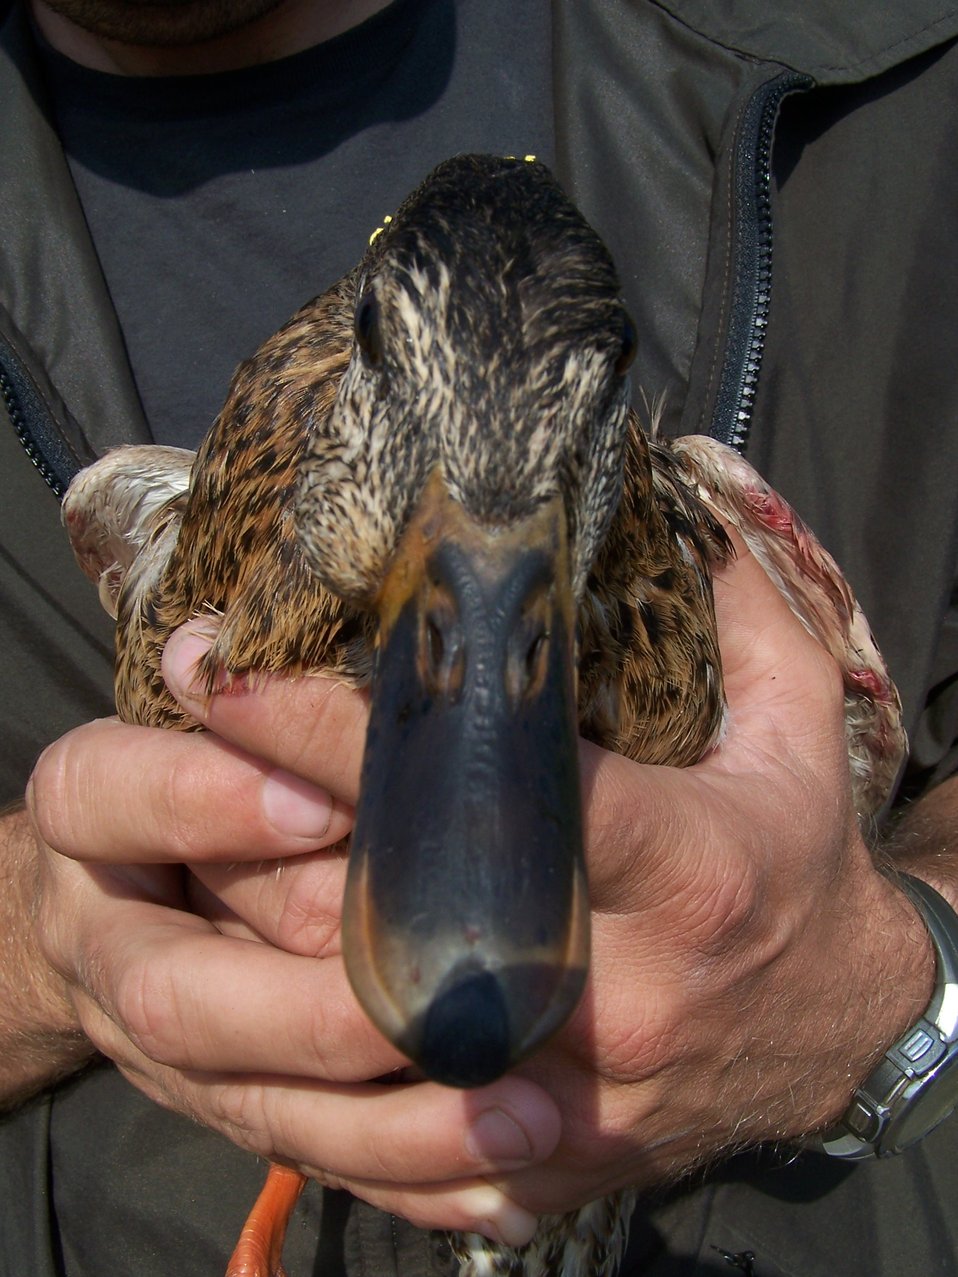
Banding a Female Mallard

Banding waterfowl on Bowdoin NWT
Mallard hen